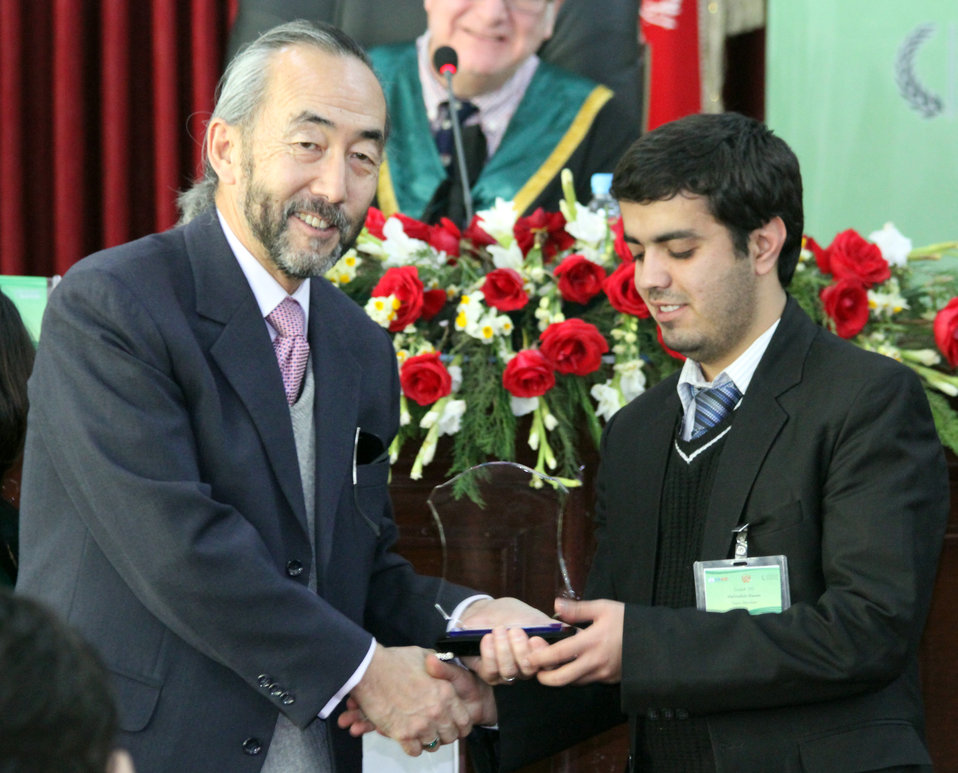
Afghanistan Final National Round of the 2013 Philip C.Jessup International Law Moot Court Competition